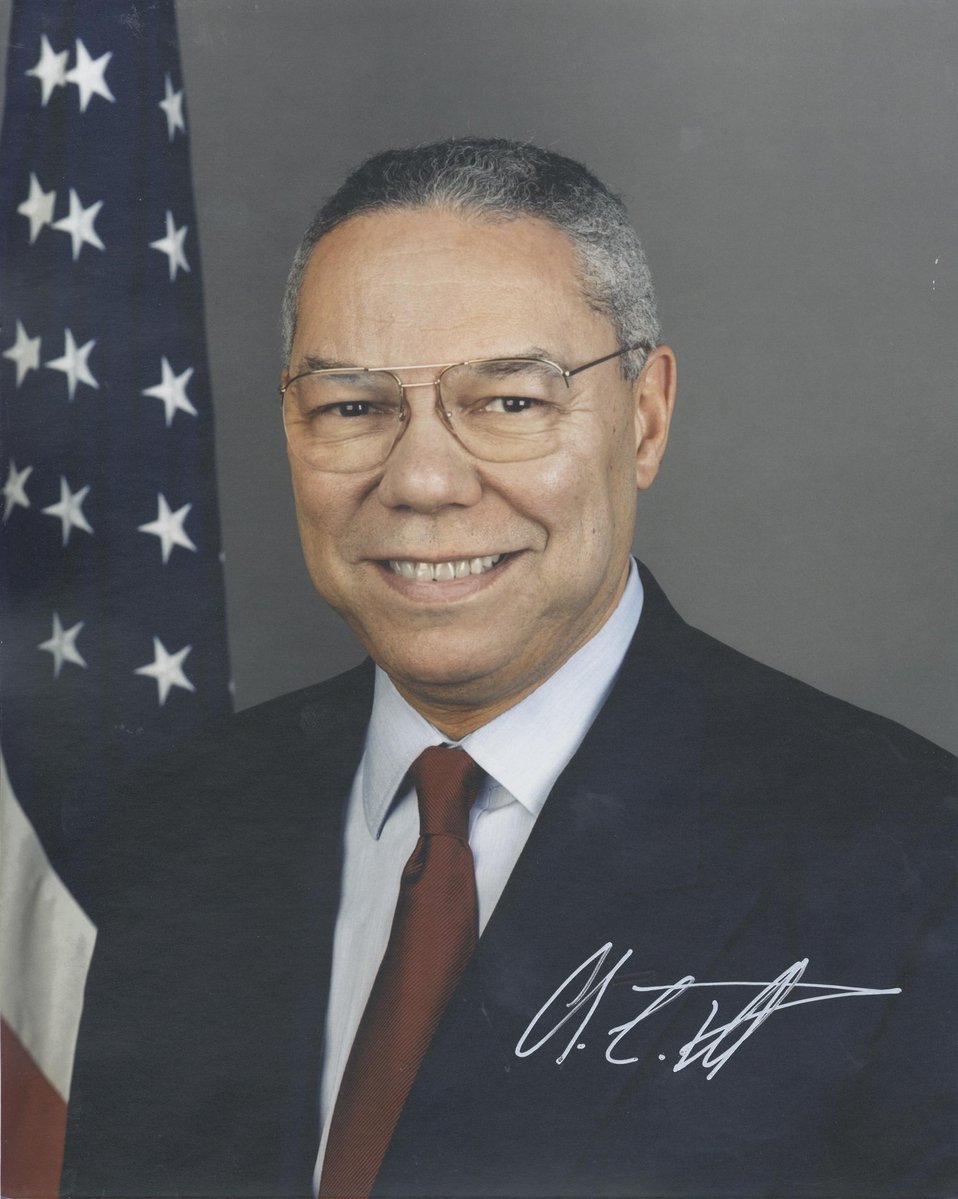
Colin L. Powell, U.S. Secretary of State, January 20, 2001 to January 25, 2005